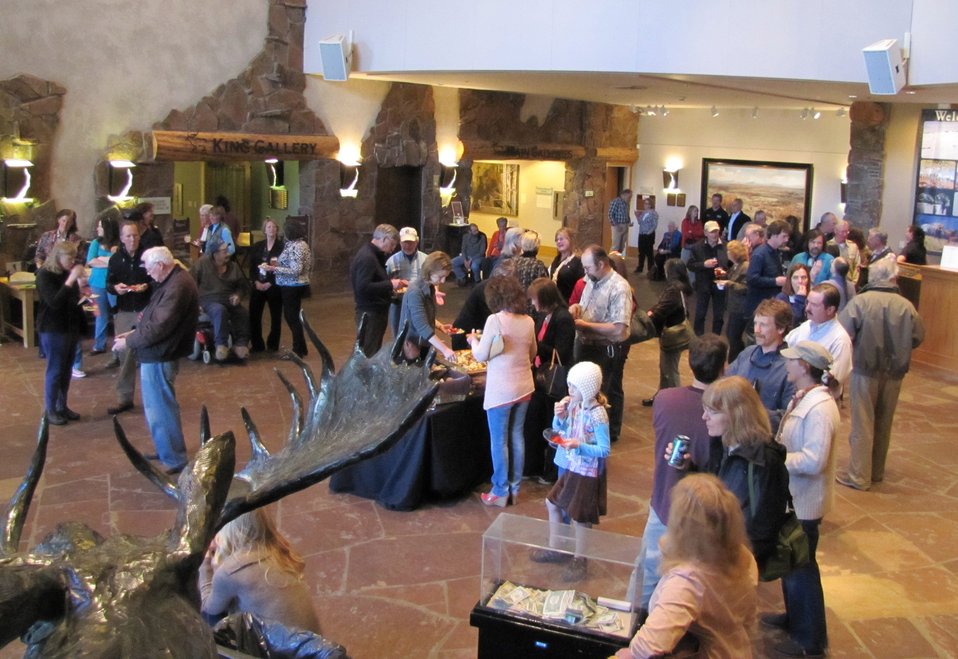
'100 Day to 100 Years'

The National Elk Refuge held a special centennial event at the National Museum of Wildlife Art on May 2, 2012. The date marked 100 days until August 10, the 100-year anniversary of the date that an Act of Congress appropriate money for the purchase of lands a maintenance of a winter elk refuge.

The May 2nd event began with a social hour, followed by an evening of storytelling that highlighted area history and the role the Refuge has played in defining the character of the Jackson Hole valley.

Credit: USFWS / Steve Miller, National Elk Refuge volunteer